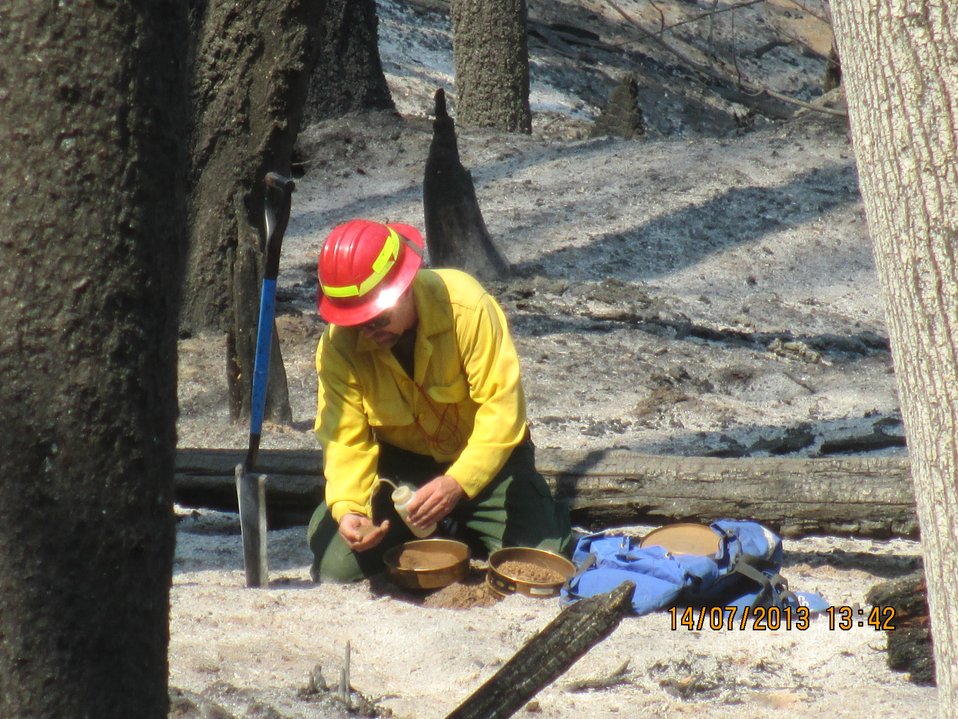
Burned Area Emergency Response (BAER) soil scientist assesses burned area of Rim Fire. BAER teams start work even before the fire is completely extinguished at the Rim Fire. BAER is a rapid assessment of burned watersheds by a BAER team to identify imminent post-wildfire threats to human life and safety property and critical natural or cultural resources on National Forest System lands and take immediate actions to implement emergency stabilization measures before the first major storms. Fires result in loss of vegetation exposure of soil to erosion and increased water runoff that may lead to flooding increased sediment debris flows and damage to critical natural and cultural resources. BAER team members implement seeding and mulching installation to prevent erosion, erect temporary water run-off control structures that will protect recovering areas, and installation of warning signs, replace safety related facilities, remove safety hazards, prevent permanent loss of habitat for threatened and endangered species, and prevent the spread of noxious weeds and protect critical cultural resources. The Rim Fire in the Stanislaus National Forest near in California began on Aug. 17, 2013 and is under investigation. The fire has consumed approximately 256,169 acres and is 84% contained.